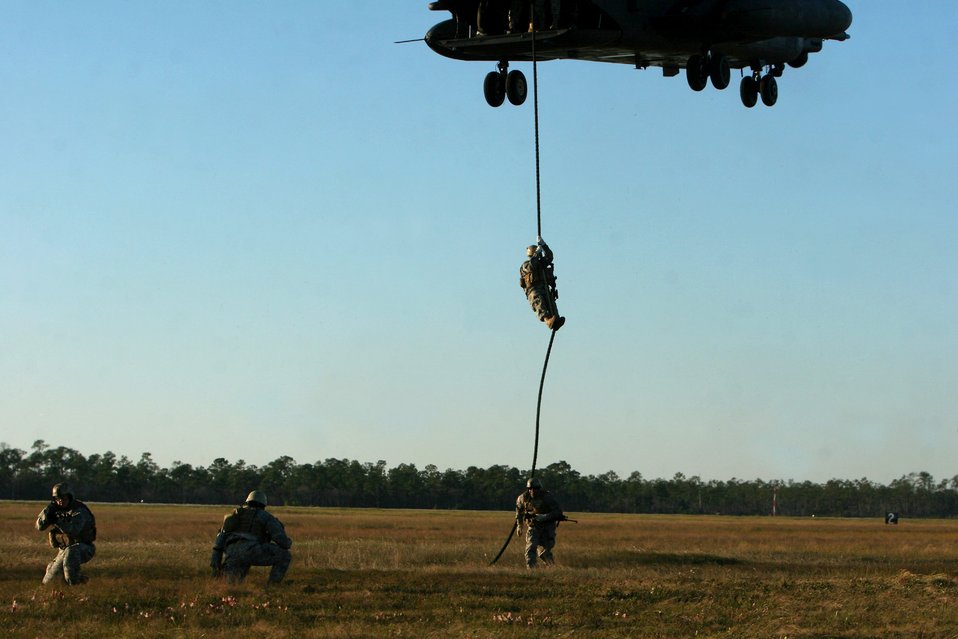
Emerald Warrior kicks off at Hurlburt Field

Green Berets practice